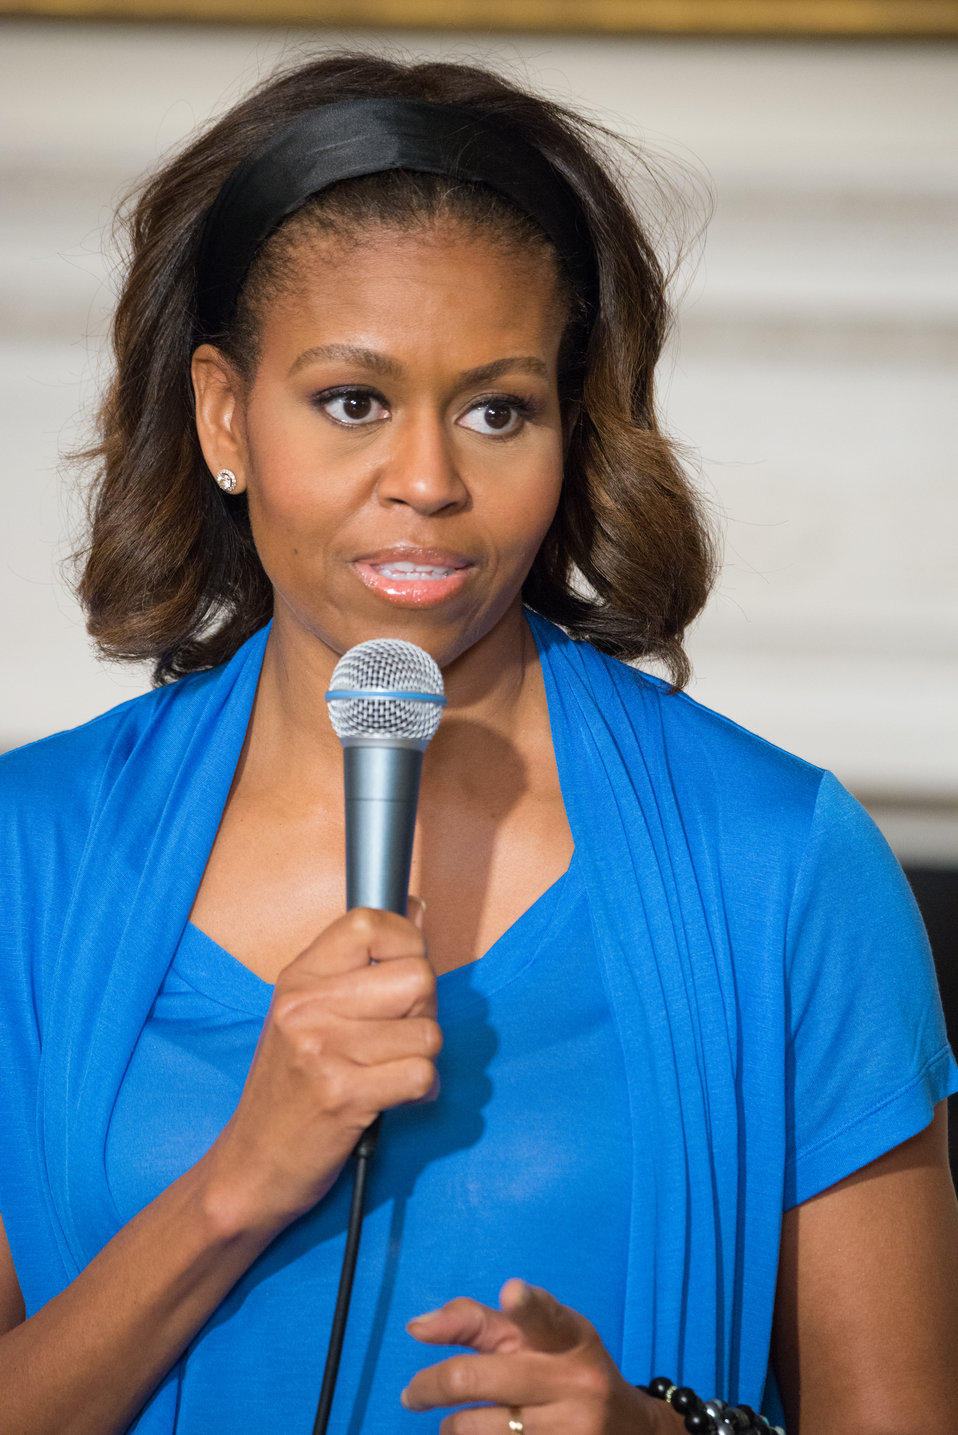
First Lady Michelle Obama speaks about the importance of healthy meals and exercise to Washington, D.C. students from Cleveland Elementary School, Friendship Public Charter School, Kimball Elementary School, Bancroft Elementary School, and Harriet Tubman Elementary School in the State Dining Room of the White House in Washington, D.C. on Thursday, Jun. 12, 2014. The students, who helped plant the garden in the spring, made lunch from this year’s summer crop with the help of White House chefs and visiting school nutrition directors from Orlando, FL, Dallas, TX, and West Virginia USDA photo by Lance Cheung.